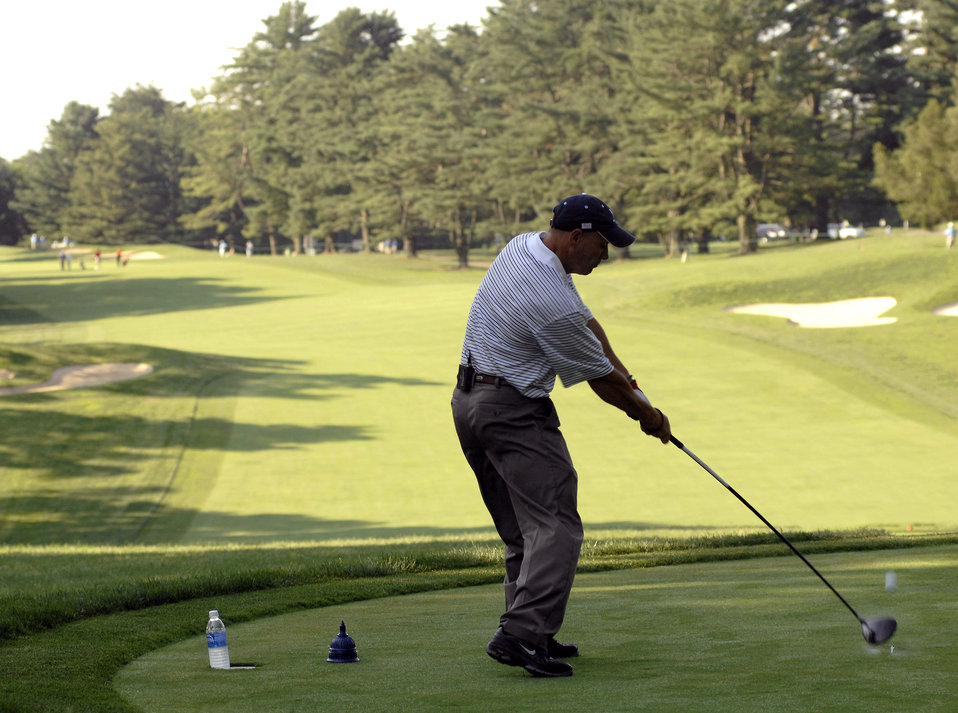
Andrews Airman participates in national golf tournament

Senior Master Sgt. Kirk Kessler tees off during the 2nd Annual AT&T National Golf Tournament July 2 at the Congressional Country Club in Bethesda, Md. The Tiger Woods Foundation selected Sergeant Kessler to play in the tournament. Sergeant Kessler is assigned to the 316th Civil Engineer Squadron from Andrews Air Force Base, Md.